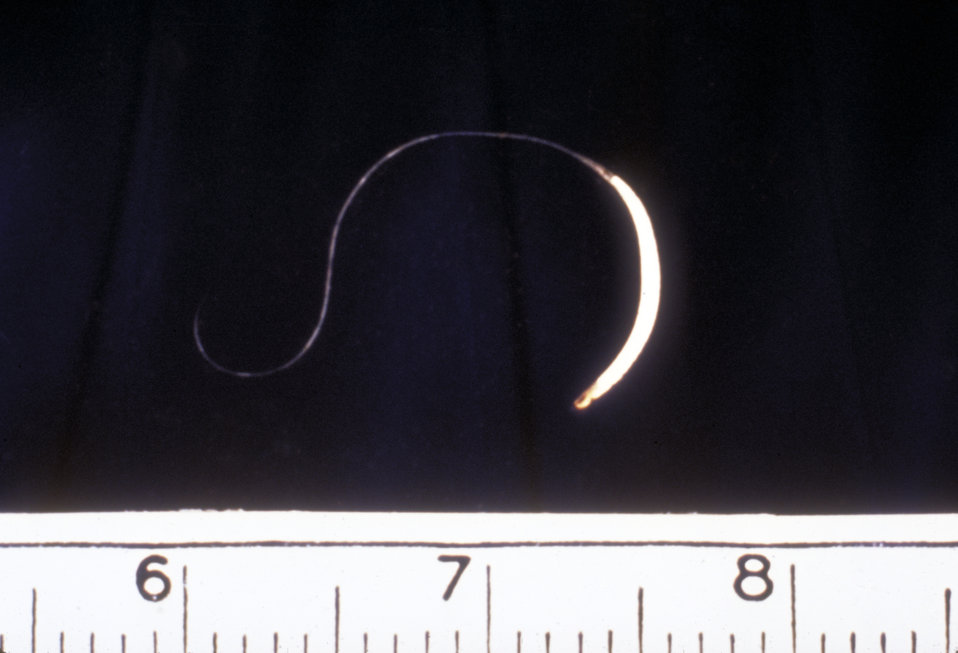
This micrograph of an adult Trichuris female human whipworm, reveals that its size in centimeters is approximately 4cm.